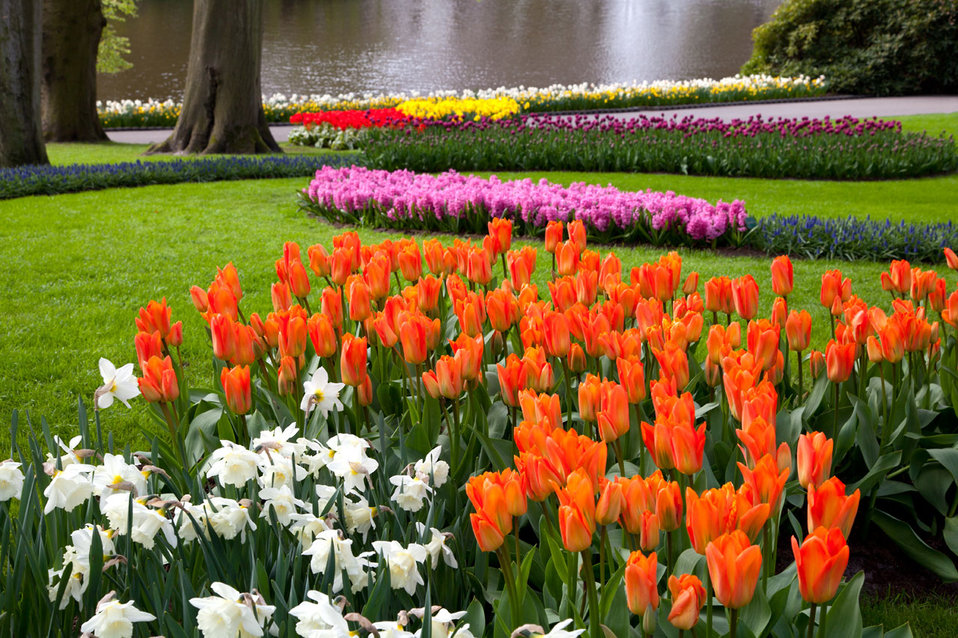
Flowers in keukenhof

Colorful flower beds in keukenhof gardens.